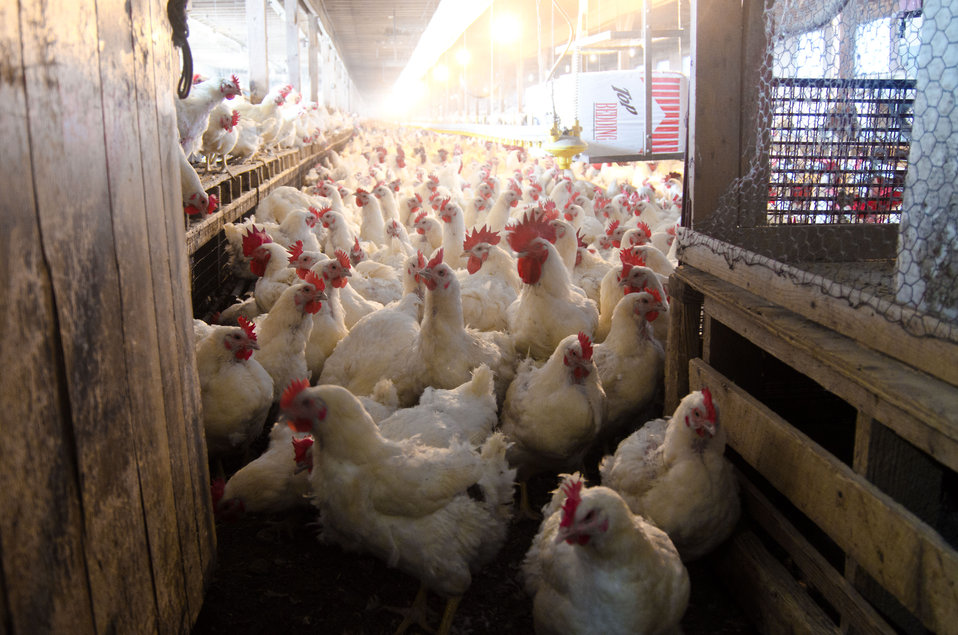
Some of the 17,000 poultry at Seldom Rest Farms located, north of Myerstown, PA, on Wednesday, April 20, 2011. The chickens are kept in a two story chicken house and produce approximately 2.5 million chicks each year. To supplement their electrical needs, they chose a contractor who knew about United States Department of Agriculture (USDA) Rural Energy for America program (REAP) grants and helped them through the application process. The farm was awarded a $152,000 grant (25% of the cost). to install the 1001kW solar array to power their farm, a neighboring farm and homes on the local electrical grid. The 240 solar panels were ground mounted with 5-foot clearance underneath to allow sheep to graze and rest underneath protected from the rain, sun or snowfall. Ten inverters change the DC electrical energy from the panels into AC energy that goes into the local power grid. Spring statistics show it is producing more than expected. REAP offers grants and/or loan guarantees for the purchase and installation of renewable energy generating systems and for energy efficiency improvements.